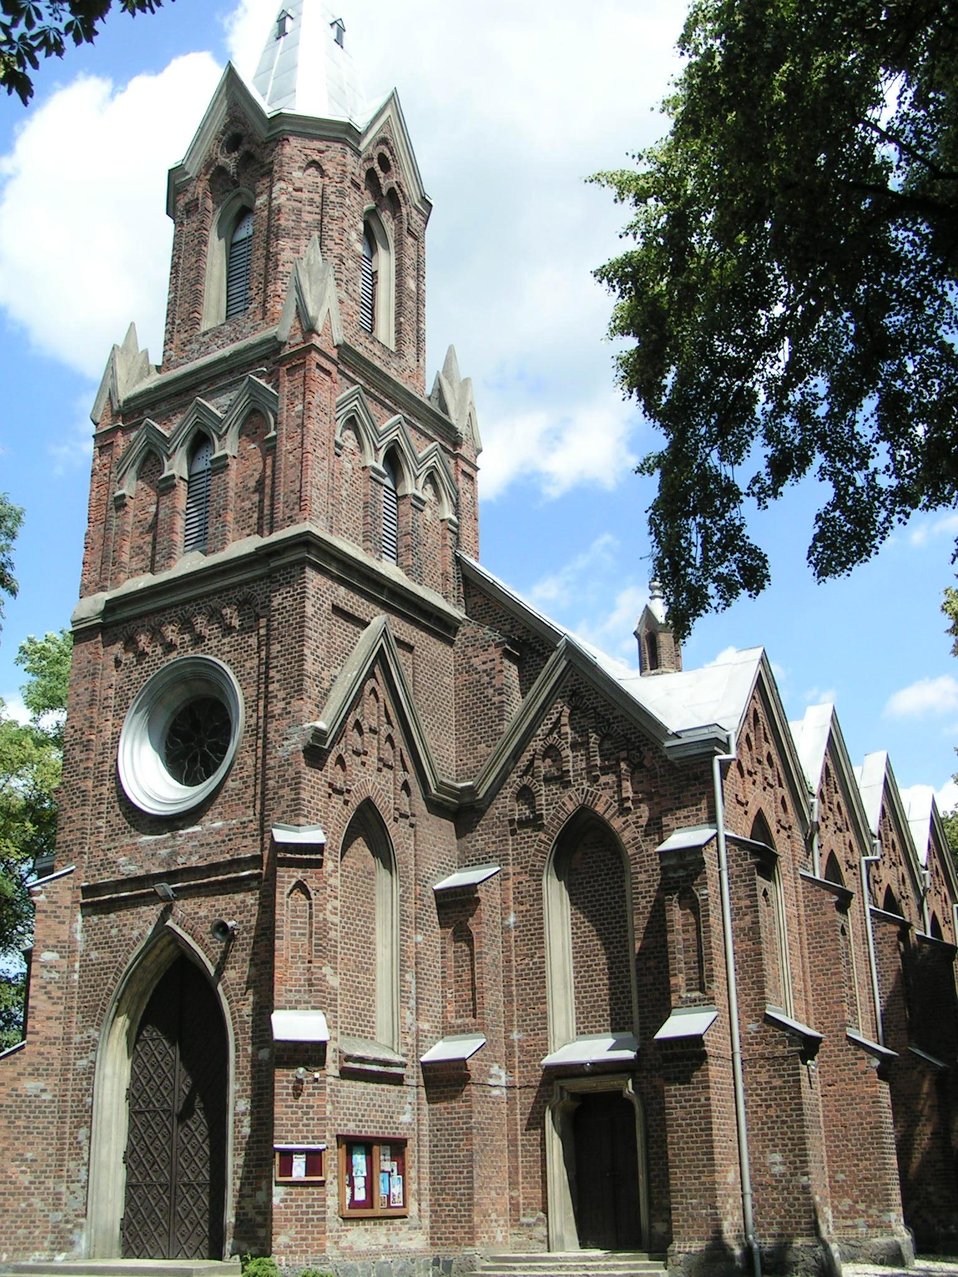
Racięcice - kościół